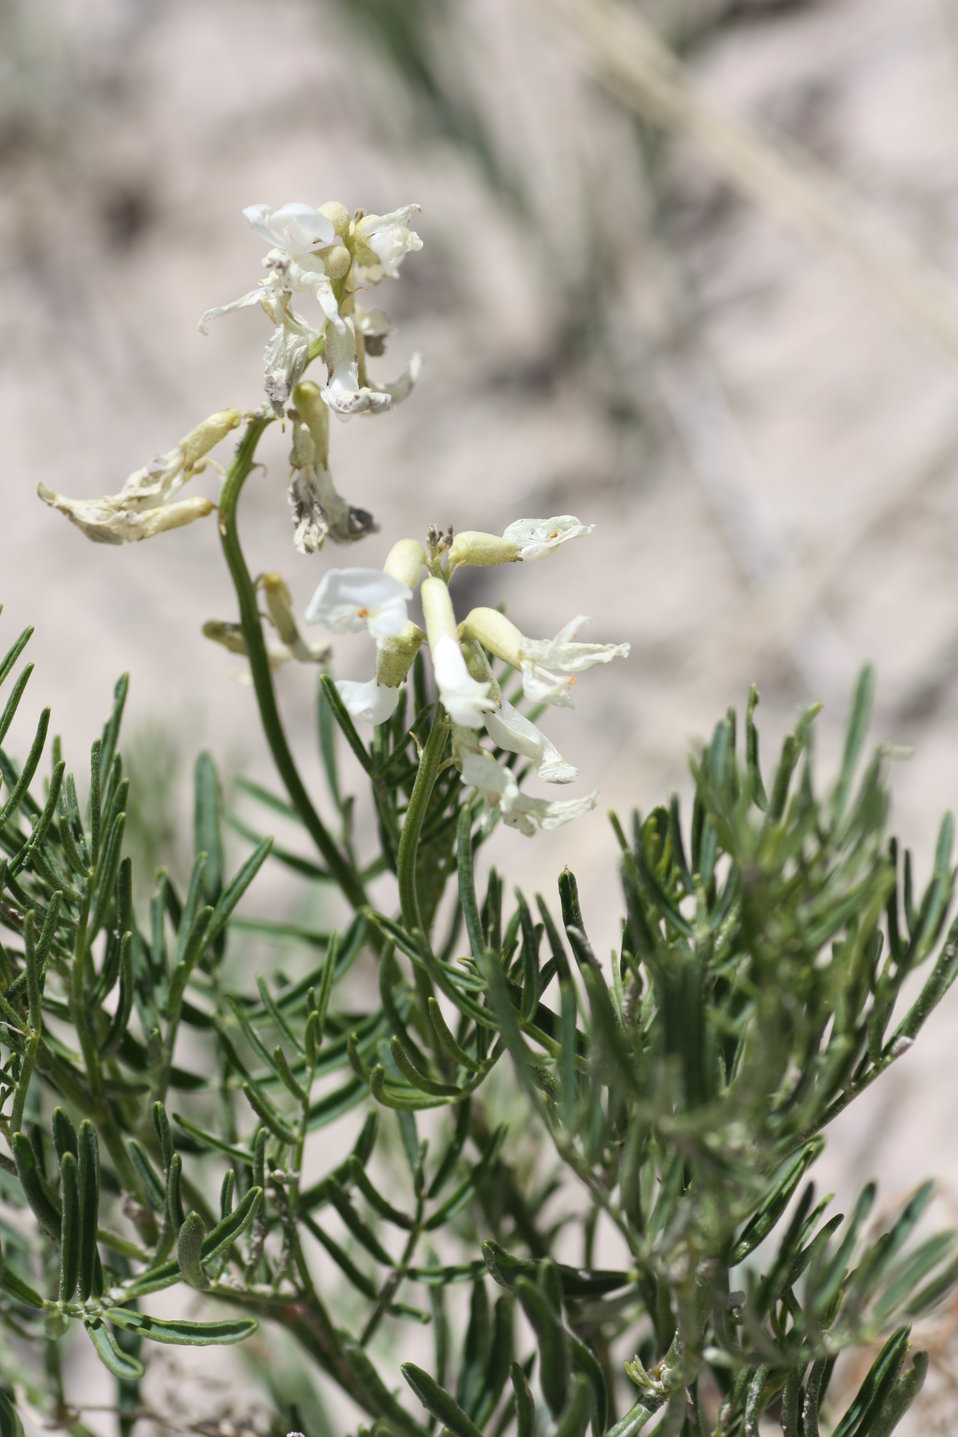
Osterhout milkvetch flowers are white and showy to attract pollinators.

Photo credit: USFWS
...........................................................................

BACKGROUND:
The Osterhout milkvetch (Astragalus osterhoutii) and the Penland beardtongue (Penstemon penlandii) are both extremely rare plants endemic to barren white shale outcrops of the Niobrara Shale and Troublesome Formations in Grand County of northern Colorado. Both species are only found near the Town of Kremmling in “Middle Park,” a high elevation sagebrush park at 7,500 feet surrounded by various ranges of the Rocky Mountains in Grand County, Colorado.

The Osterhout milkvetch, a member of the pea family (Fabaceae), is a slender-stemmed plant with elliptical leaves and creamy white flowers in clusters at the end of foot-long stalks. It was discovered in 1905 by one of Colorado’s pioneer botanists, George Osterhout. The species only grows on highly seleniferous (containing the element selenium) soils that accumulate in foliage and causes the plant to smell pungently of garlic. Only a small proportion of the many milkvetch species are known to accumulate this toxic chemical. Osterhout milkvetch is known from five small and scattered locations within an eight-mile radius, across an estimated 600 acres of habitat.

The Penland beardtongue, a member of the plantain family (Plantaginaceae), was discovered much later than the Osterhout milkvetch. In 1986, two Colorado botanists, David Johnson and John Anderson, discovered the new species on a visit to an Osterhout milkvetch site along Troublesome Creek. The Penland beardtongue is a small plant with thin, needle-like leaves and bright blue to violet flowers. It is known only from a unique badland area along Troublesome Creek extending 4 miles north to south on an estimated 800 acres. In order to reproduce, this species requires pollination by native ground-dwelling, solitary bees in the genus Osmia (mason bees).

Today, these two Middle Park endemic species are threatened by commercial, residential, and agricultural property development, the associated new utility installations and access roads, reservoir operations, off-highway vehicle recreation, oil and gas exploration, and livestock grazing. A loss of pollinators and their habitat due to development is also a threat to both species. Because of the limited ranges of the two species, their small population sizes, and numerous threats, they were listed as endangered under the Endangered Species Act in 1989.

Thirty-three percent of the Osterhout milkvetch and a small percentage of the Penland beardtongue populations are on private lands. The Endangered Species Act does not protect plants on private lands and therefore, all conservation actions on private lands are voluntary. Funding is available to landowners wanting to conserve the species. Please contact Gina Glenne or Ellen Mayo at 970-243-2778 for further information on this species and ways that you can help with conservation and recovery.